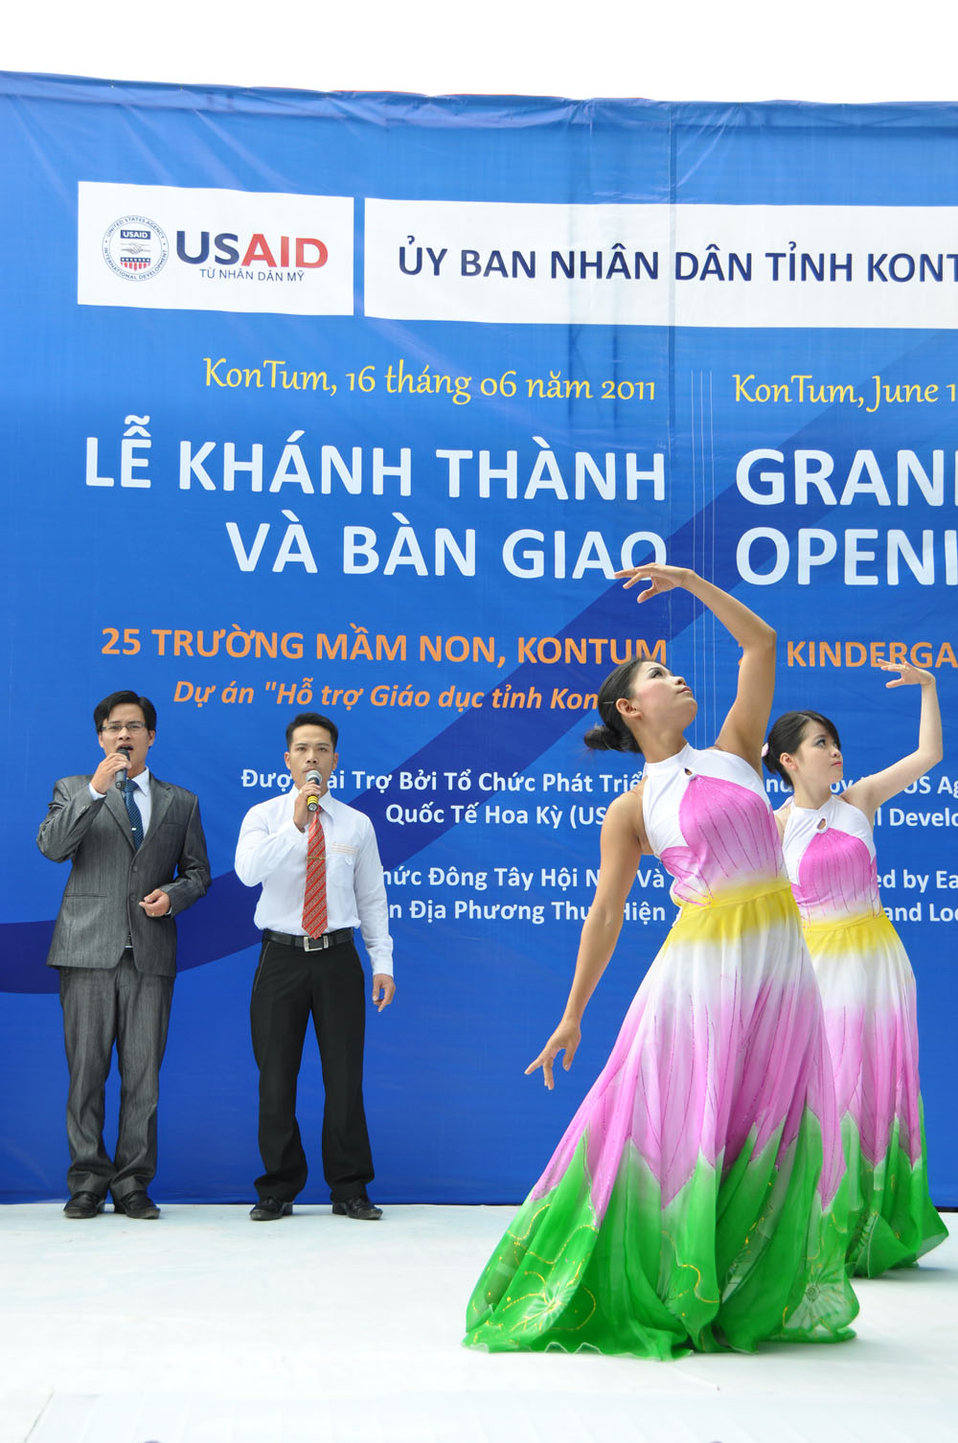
Singers and dancers perform at a kindergarten hand-over ceremony in Kon Tum.